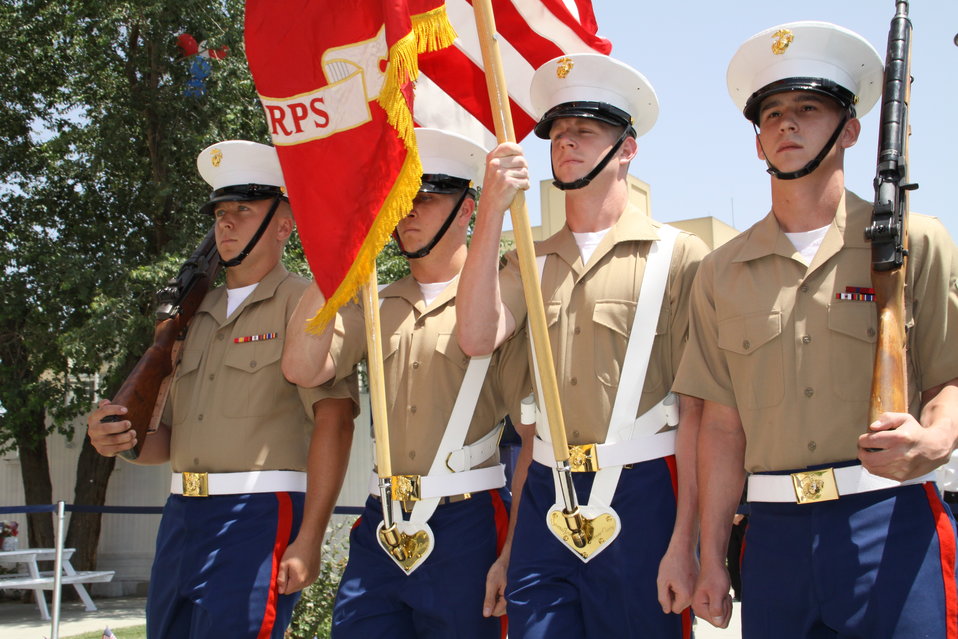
Kabul Official July 4th Celebration